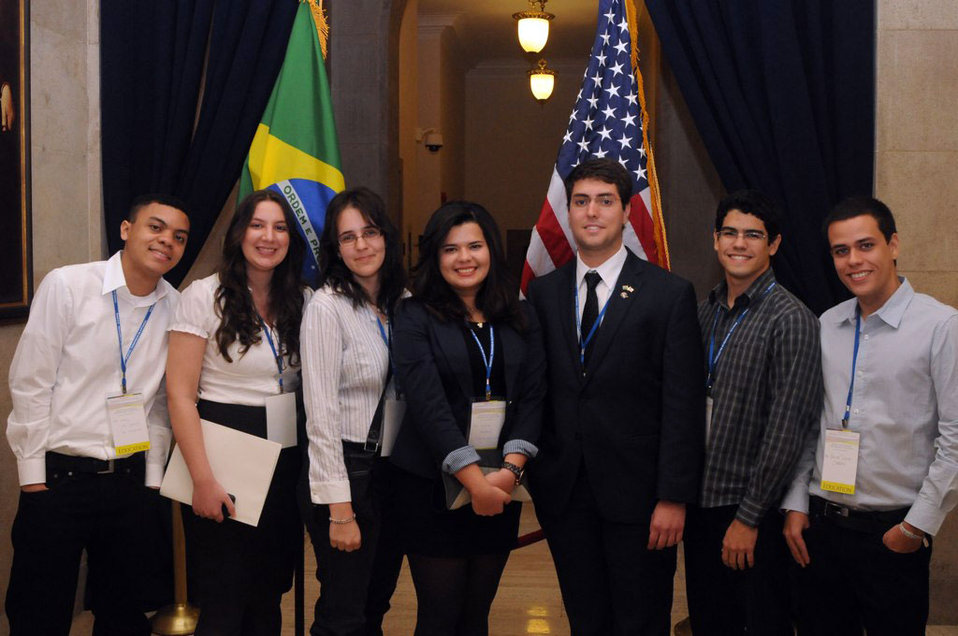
Brazilian Students Pose for a Photo

Brazilian students, who are part of the Science Without Borders program, attend a panel discussion on the program as part of the Brazil-U.S. Partnership for the 21st Century Conference at the U.S. Chamber of Commerce in Washington, D.C., on April 9, 2012.